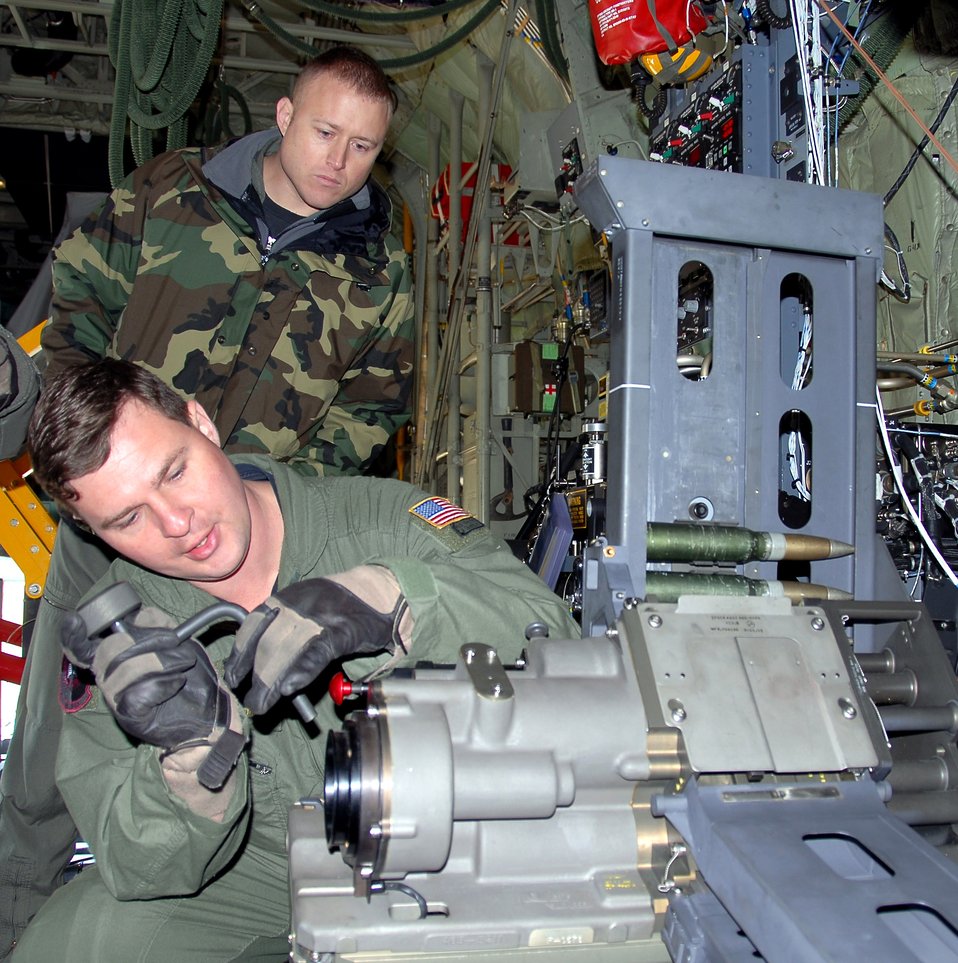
Spooky gunship armed with new cannons

Tech. Sgt. Ben Filek works on a newly-installed 30 mm Bushmaster cannon aboard an AC-130U Spooky gunship as Tech. Sgt. James Knight looks on Jan. 26 at Hurlburt Field, Fla. Both Airmen are aerial gunners with the 19th Special Operations Squadron at Hurlburt Field. The 30 mm gun will eventually replace both the 40 mm cannon and 25 mm gun on U-model gunships.